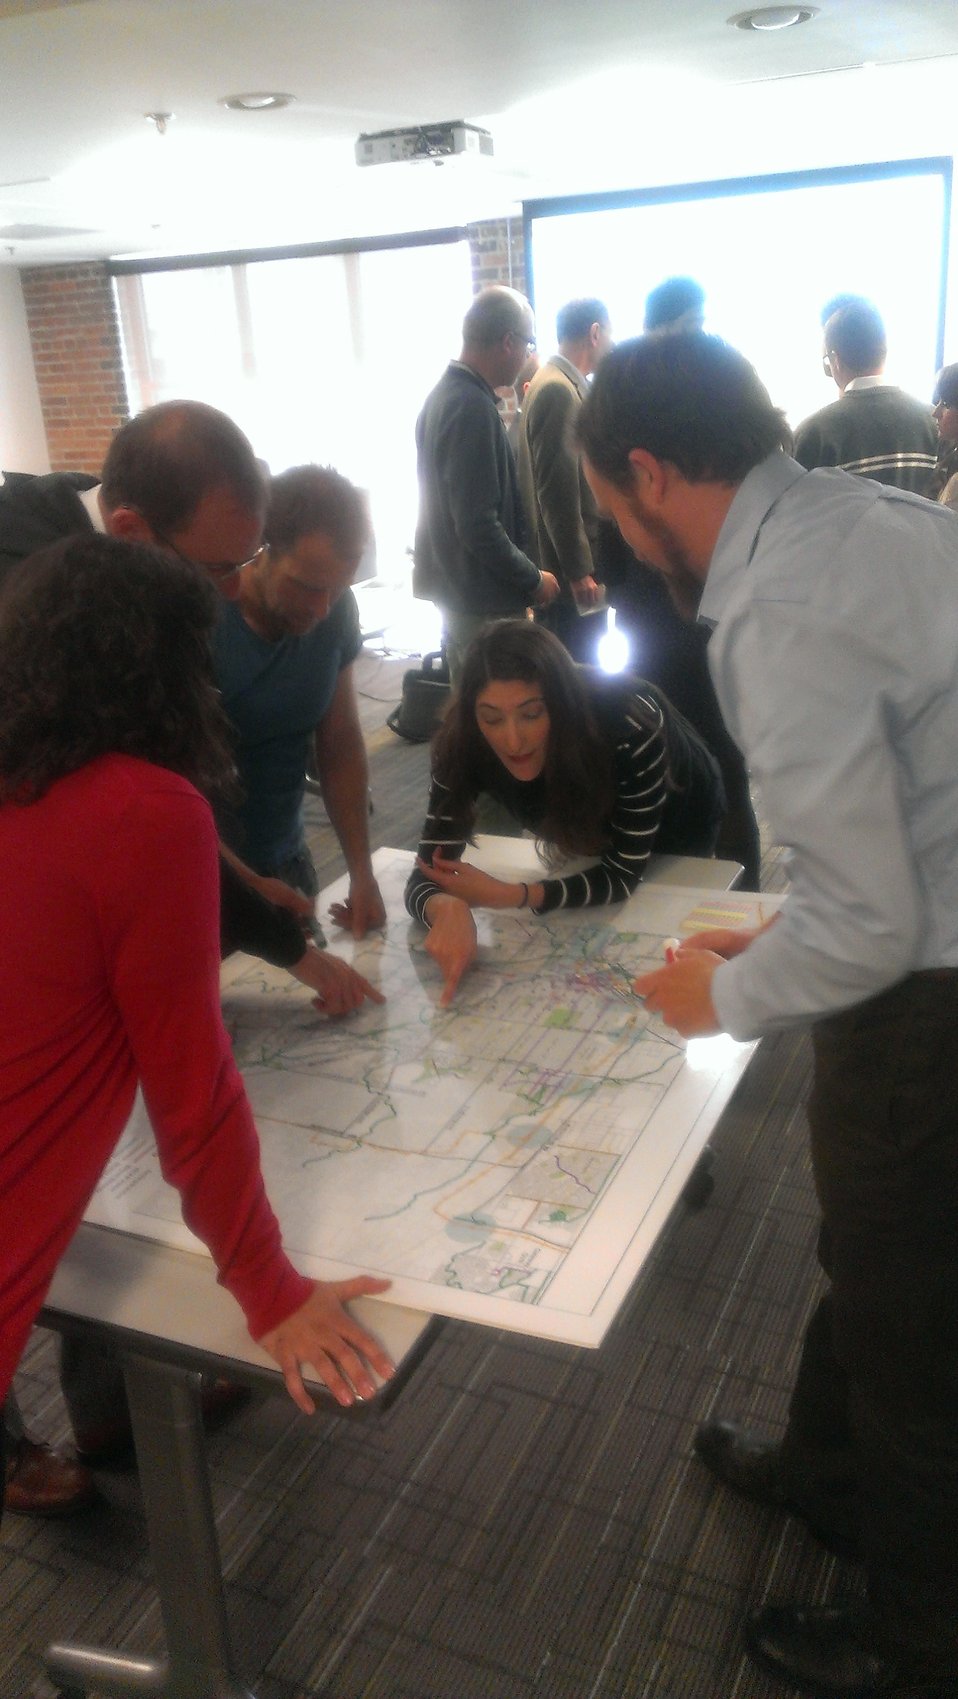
Denver Bikeshare Workshop

In #Denver, we worked with the community to identify possible locations for #BikeShare stations.